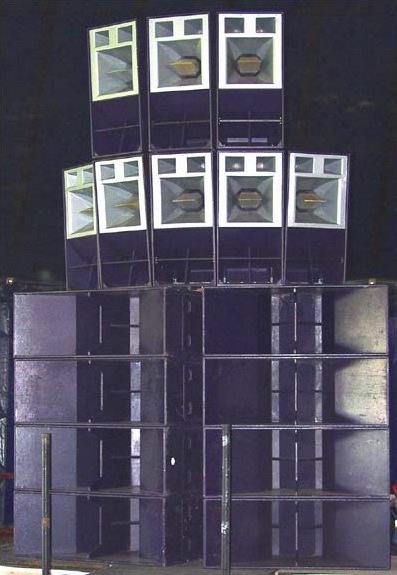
4 stack Funktion-One speaker.